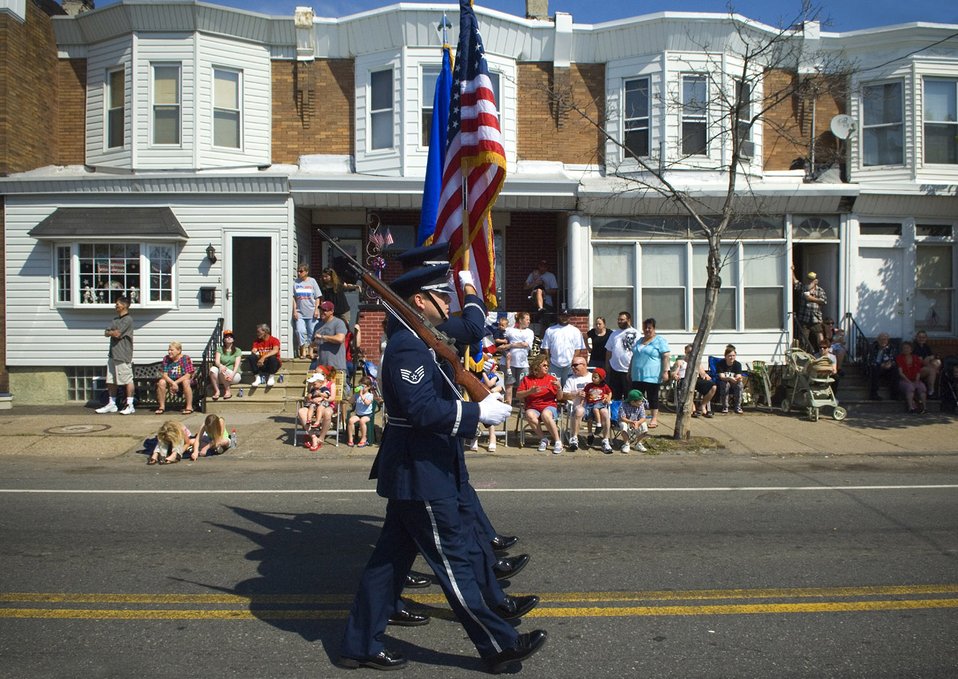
air force week

U.S. Air Force Honor Guard members of McGuire Air Force Base, N.J., lead the Bridesburg Memorial Day Parade May 26. Bridesburg is a borough in Philadelphia and hosted the kickoff celebrations for Air Force Week Philadelphia. The parade featured a fly-by of a KC-135 and a KC-10 and a performance by the U.S. Air Force Heritage of America Band. Air Force Week Philadelphia is an event designed to build new relationships in the Philadelphia metropolitan area and strengthen public support for the Air Force mission and Airmen serving worldwide in the war on terrorism.